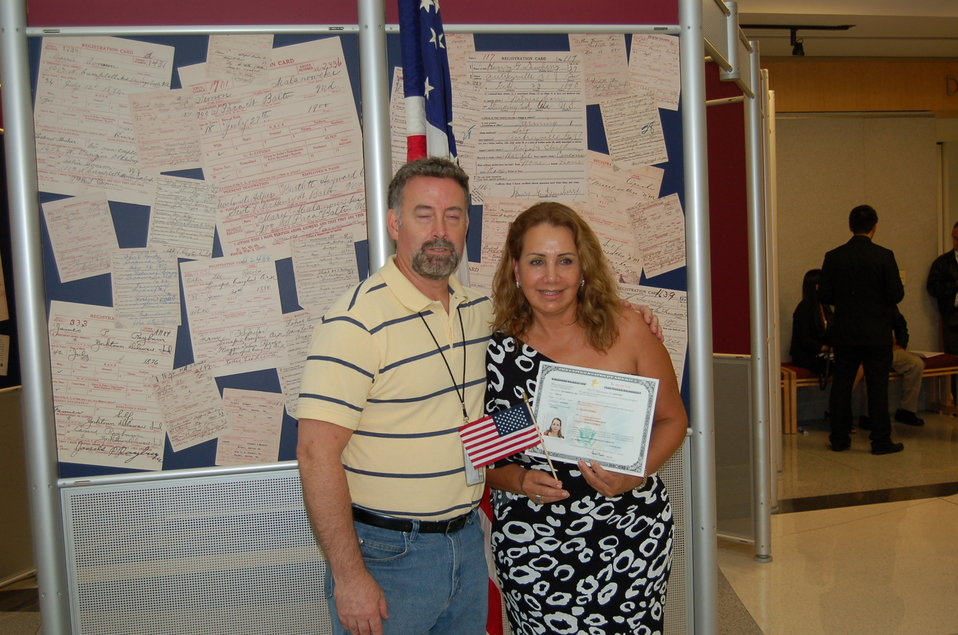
New Citizens